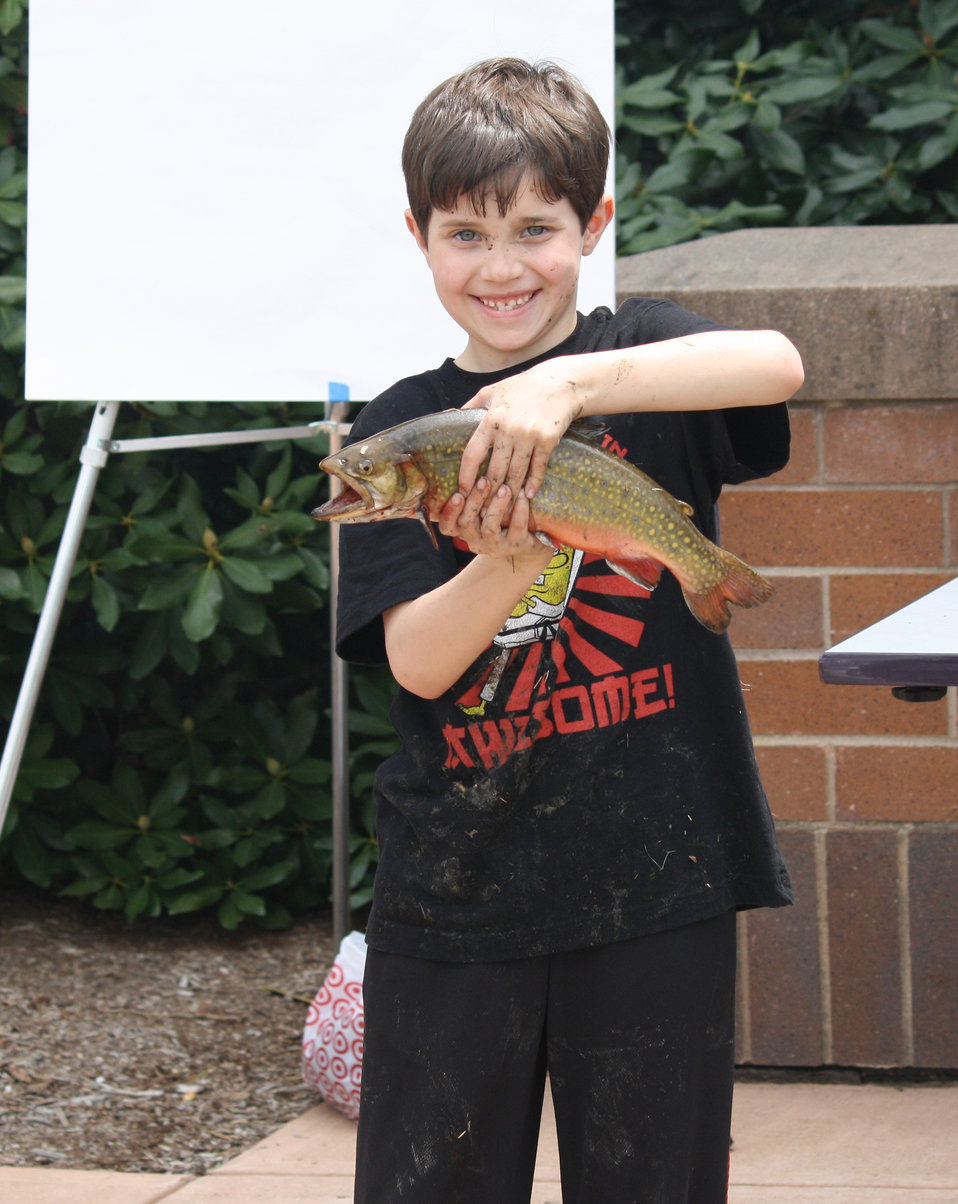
Boy with fish

USFWS fishing derby in Hadley, MA on May 7th.